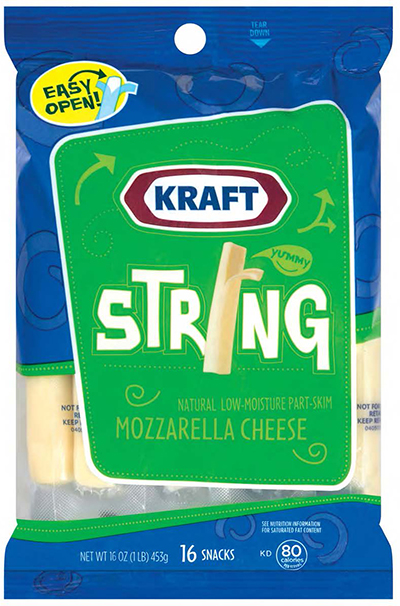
RECALLED – Cheese

October 25, 2013 – Product Recall – Kraft Voluntarily Recalls Some Varieties of Kraft And Polly-O String Cheese And String Cheese Twists Due to Premature Spoilage.